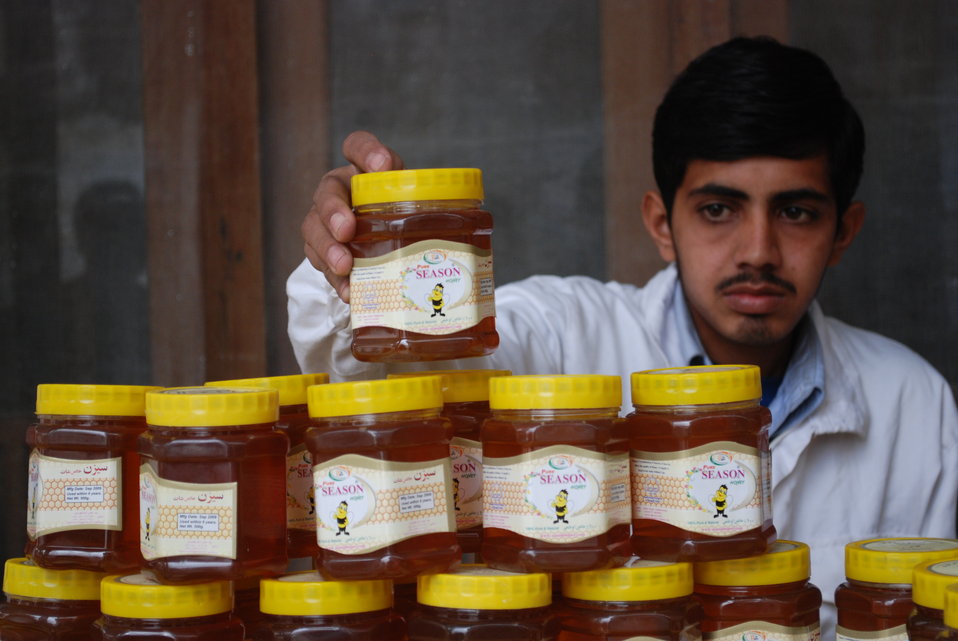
'On the Road' in Nangarhar Province